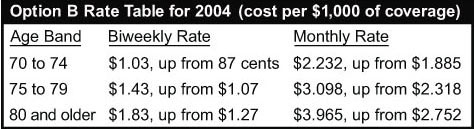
Option B Table Rate for 2004.